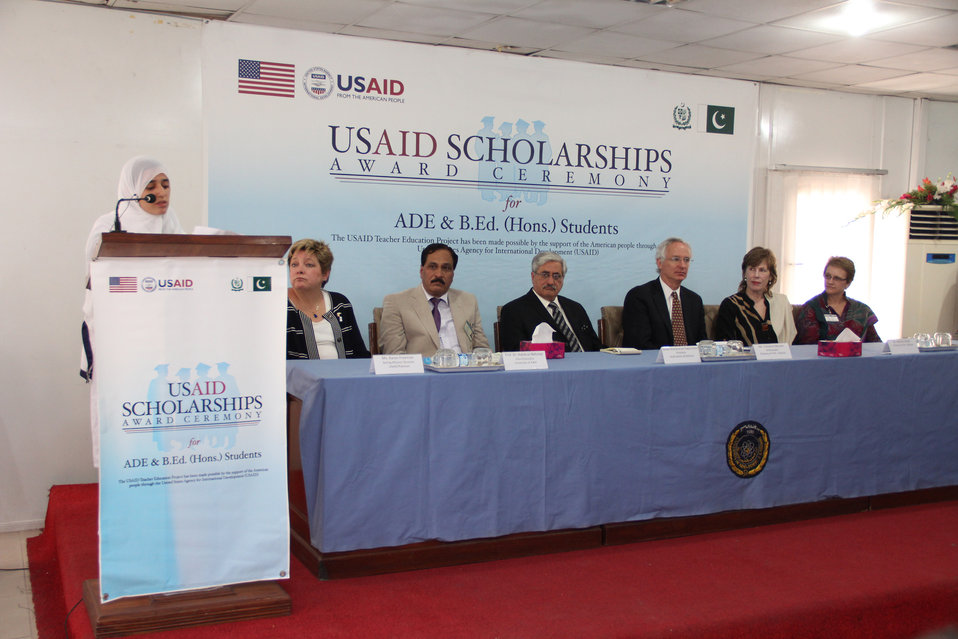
Scholarship distribution ceremony

Student of female government college of education Rawalakot addressing the audience